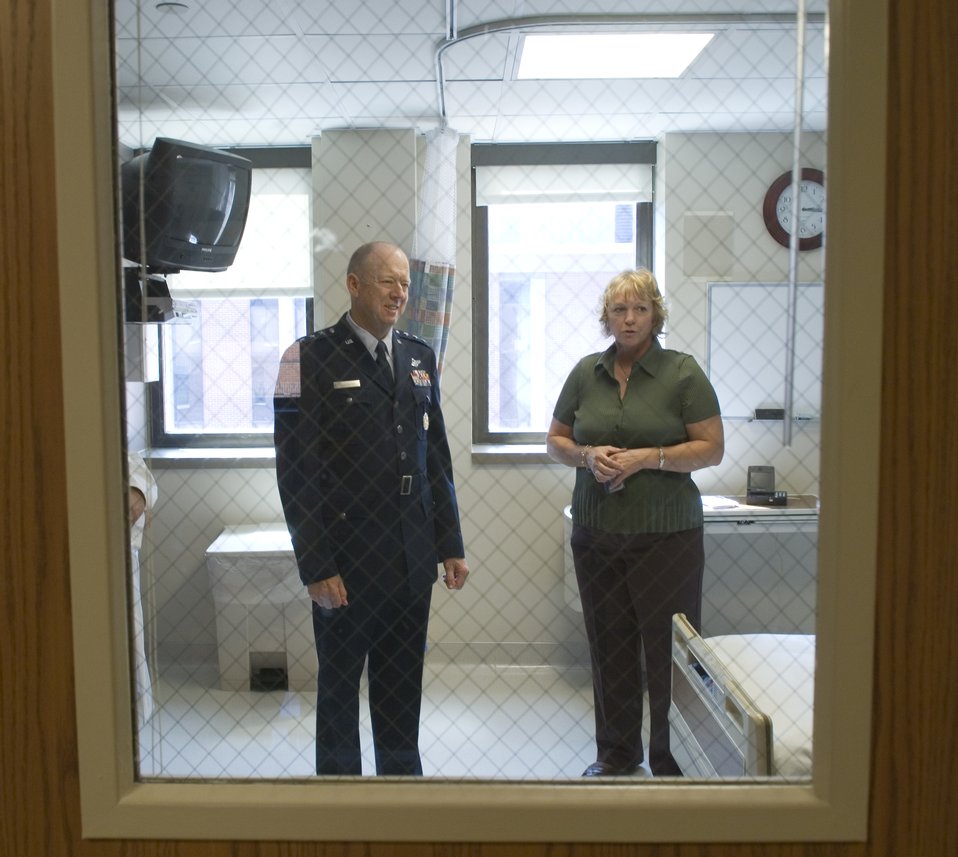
Air Force surgeon general returns to Heartland

Kate Boulter explains to Lt. Gen. (Dr.) James G. Roudebush the many unique features of a patient room in the only civilian biocontainment unit in the nation Aug. 13 in Omaha, Neb. This is a specialized 10-bed area in the University of Nebraska Medical Center College of Medicine. General Roudebush also toured the new Sorrell Center of his alma mater. The general is a native Nebraskan and the Air Force surgeon general. Ms. Boulter is a registered nurse at the hospital.